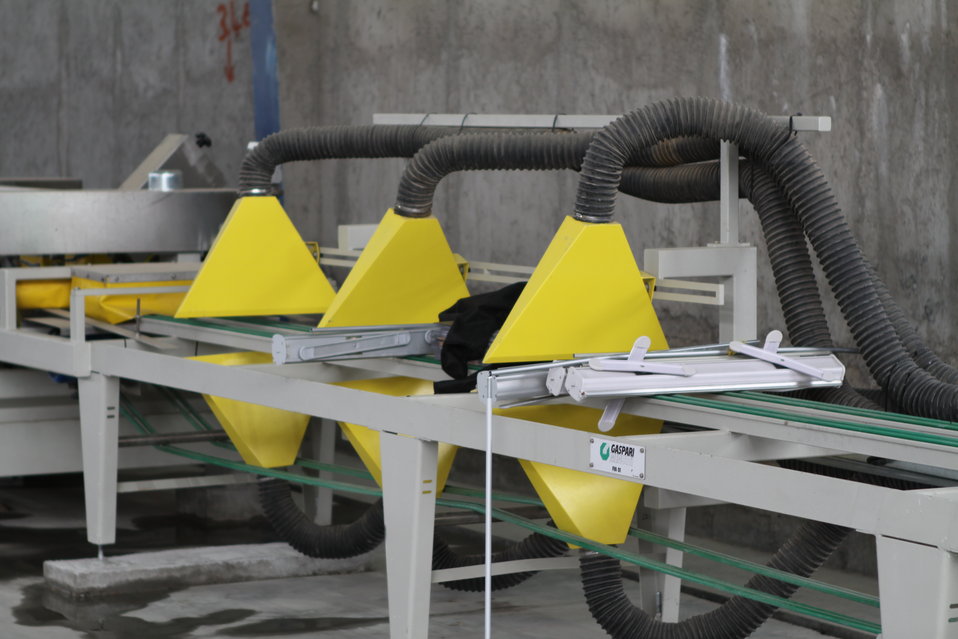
100525 Hirat Marble Conference 184